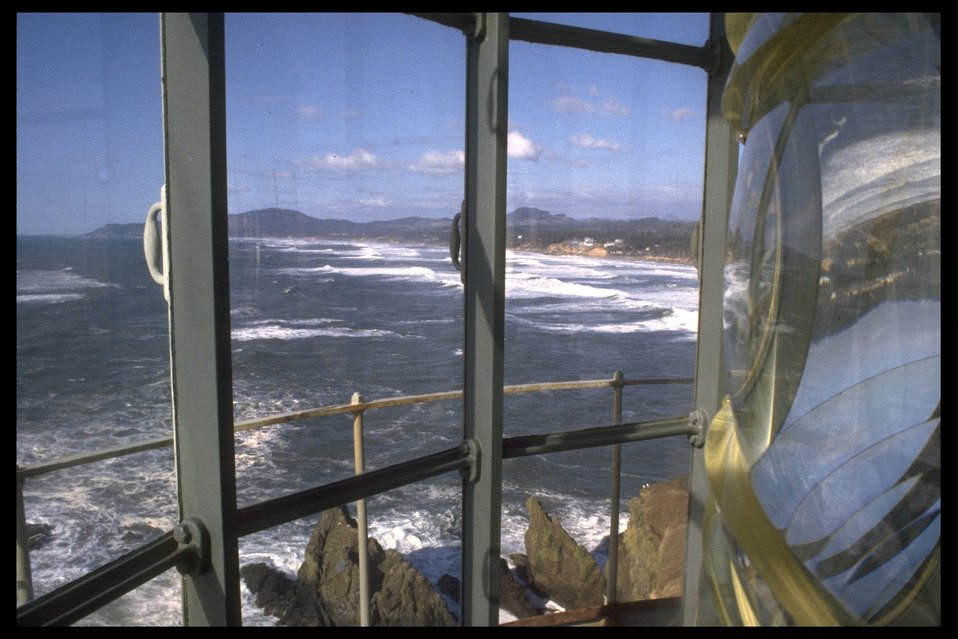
View from Yaquina Head Lighthouse lens area.